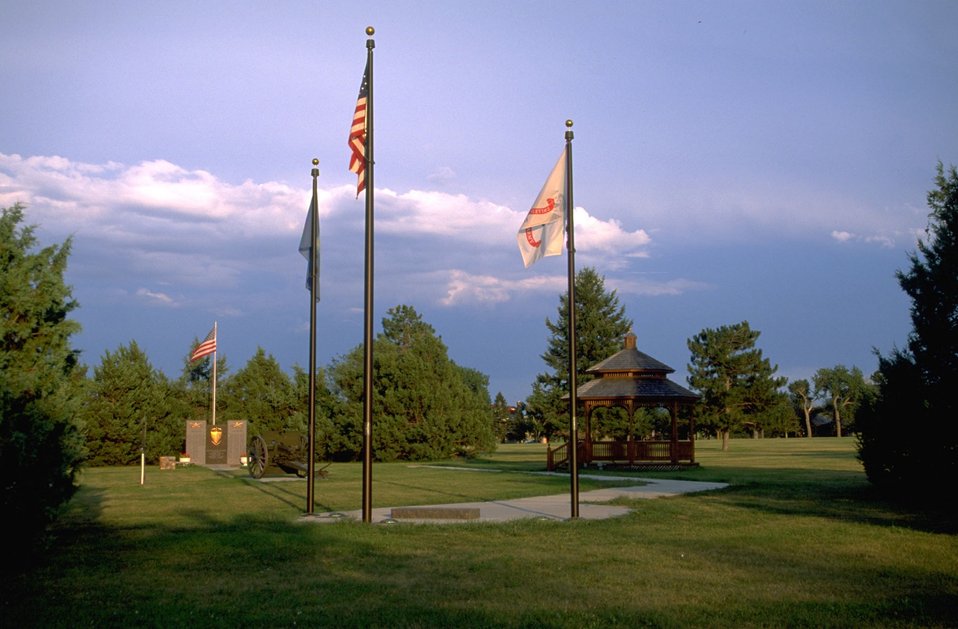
Flags at Fort Meade parade grounds